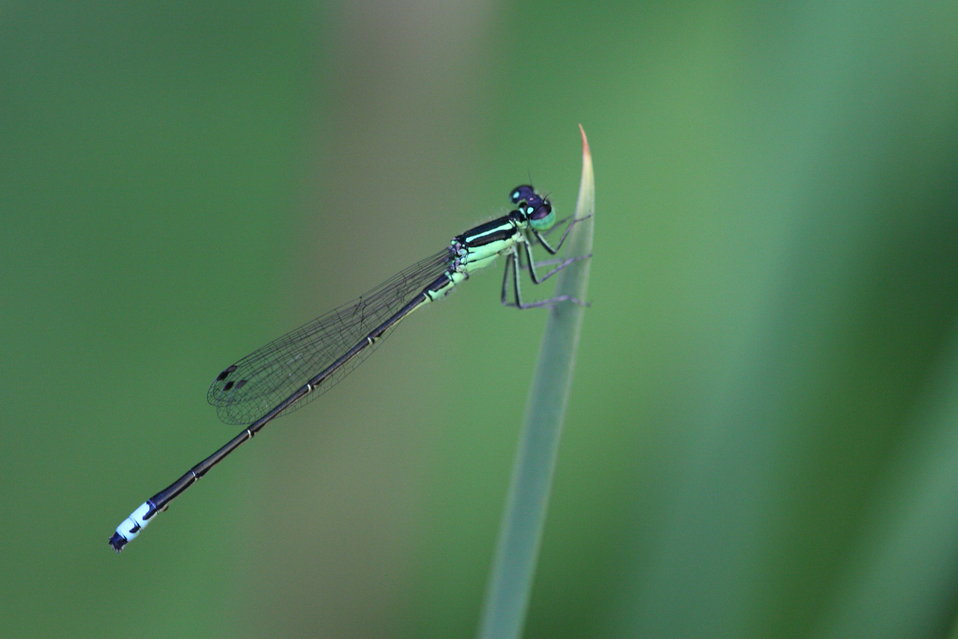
Photo of the Week - Eastern Forktail (ME)

Photo of the Week - September 2, 2013

Eastern Forktail male photographed at Green Lake National Fish Hatchery.